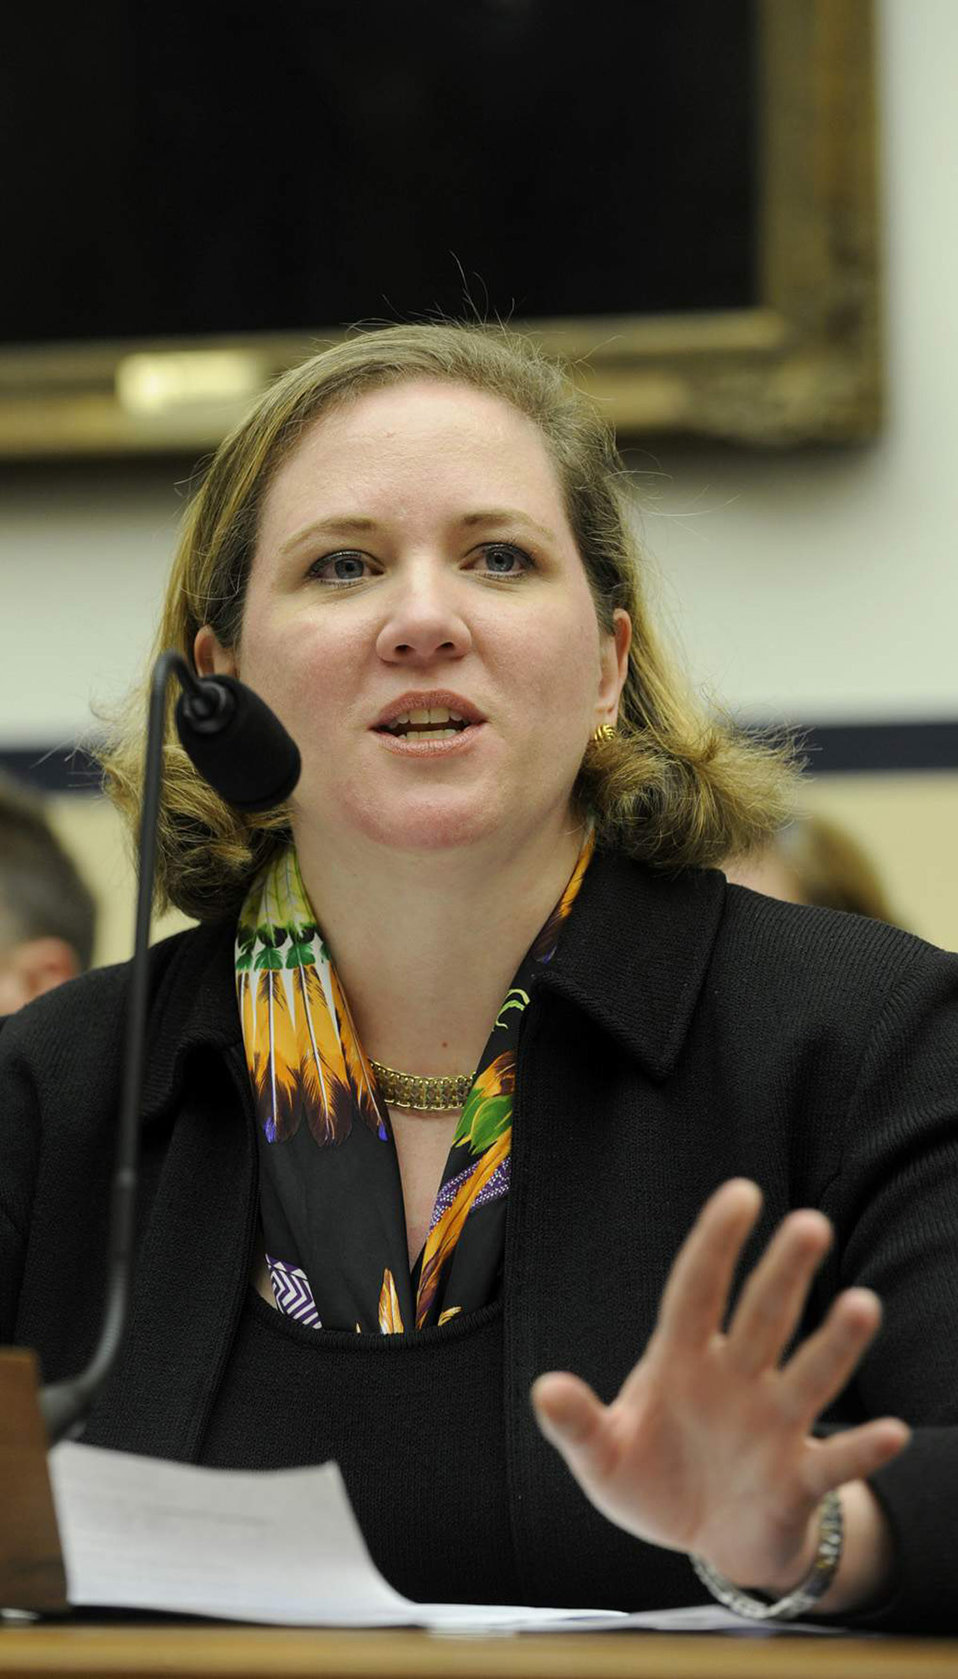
Air Force officials take space budget, acquisition strategy to Capitol Hill

Air Force Under Secretary Erin Conaton testifies before the Strategic Forces Subcommittee of the House Armed Services Committee March 15, 2011, in Washington, D.C. During the hearing, Ms. Conaton addressed the Air Force's Fiscal 2012 budget request for national security space activities.